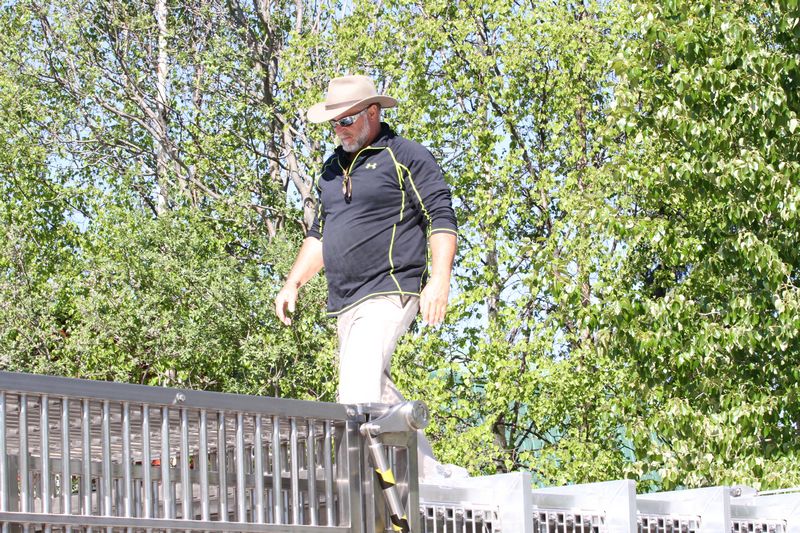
Press Conference on the polar bear holding module. USFWS/Rose Primmer